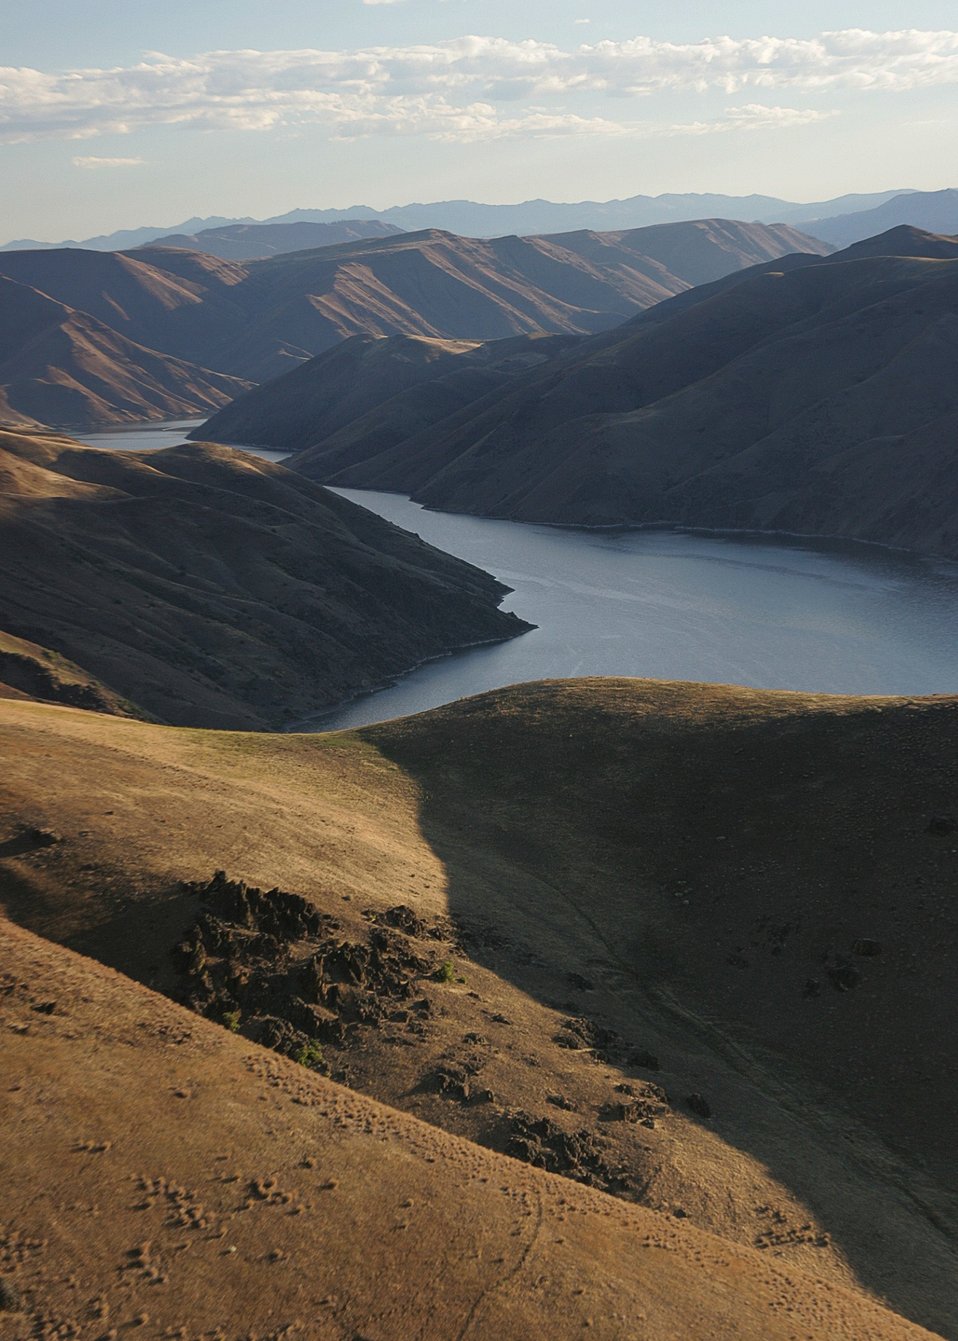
Sunrise on the Snake River Backcountry Byway.